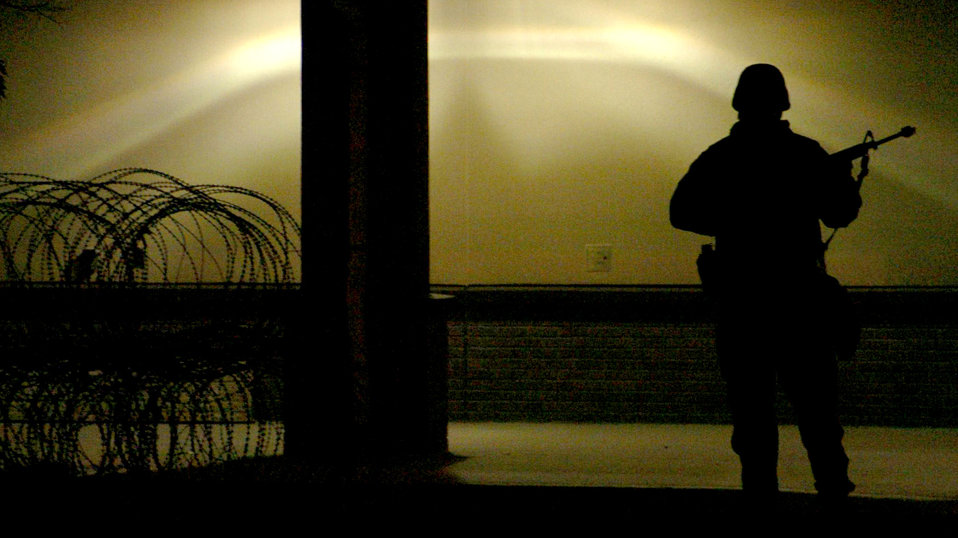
On the perimeter

OSAN AIR BASE, South Korea -- Senior Airman Michael Booker provides perimeter security during an exercise here recently. Airman Booker is assigned to the 51st Communications Squadron.